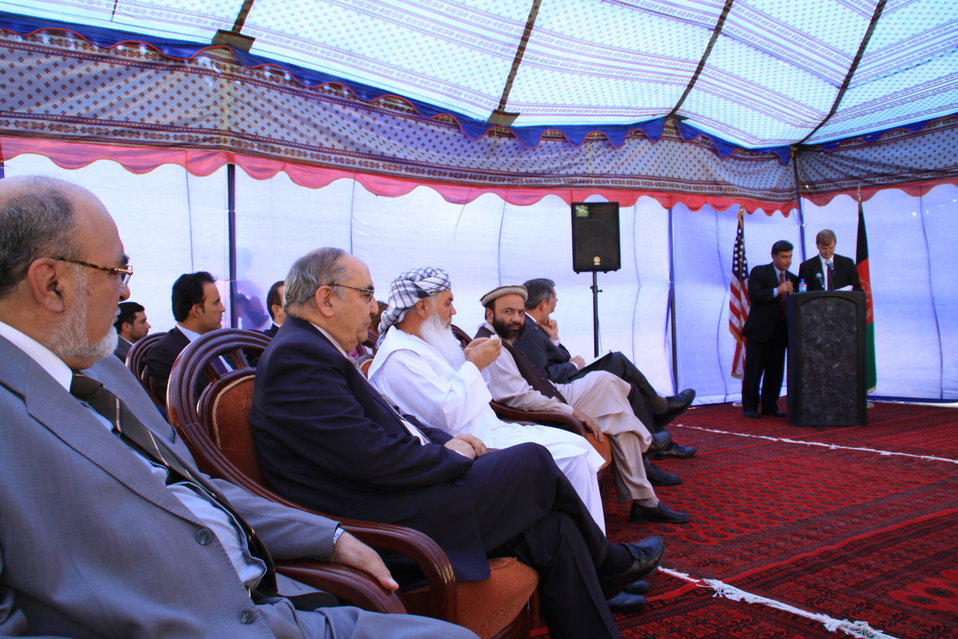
105 MW Tarakhil Power Plant Handover